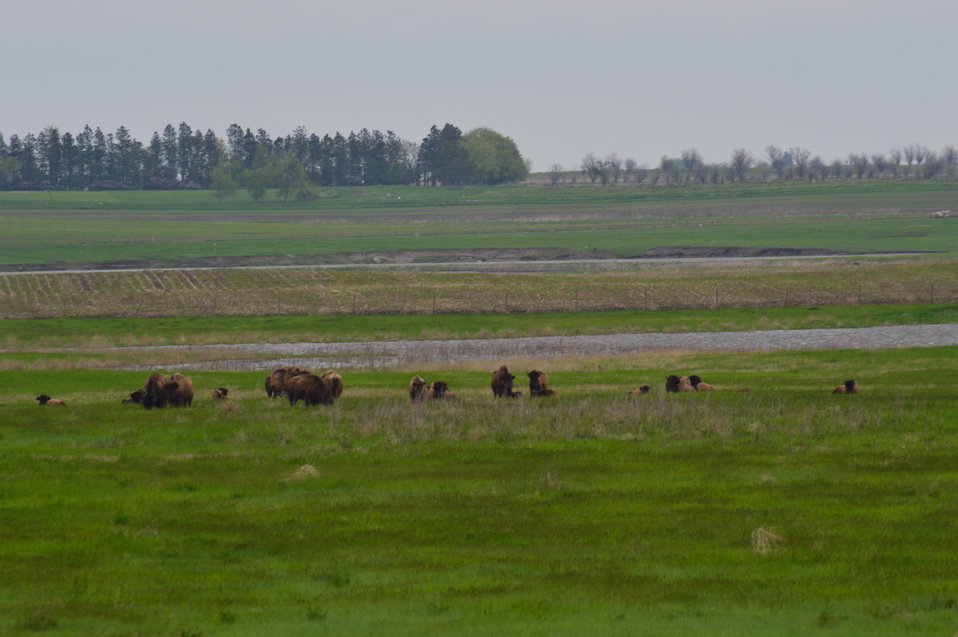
Bison Herd

Scenery and wildlife at Lake Ilo National Wildlife Refuge in North Dakota